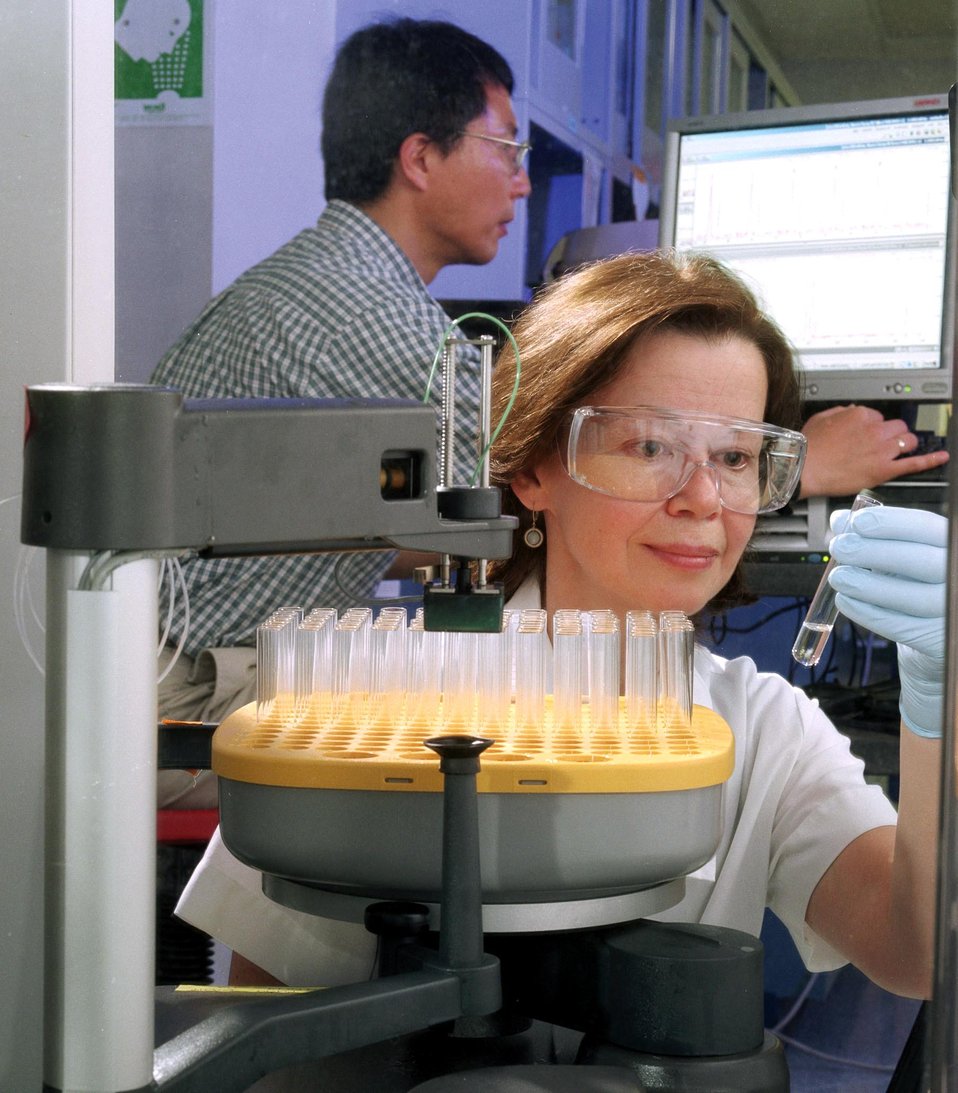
ANL BIOCHEMIST DEMENTIVA AND BIOPHYSICIST KIM WORK WITH THE FIRST ROBOT OF ITS TYPE TO AUTOMATE PROTEIN PURIFICATION.

THE ROBOT, HOUSED IN A REFRIGERATOR, IS AN INTEGRAL PART OF THE MIDWEST STRUCTURAL GENOMICS CENTER'S PLAN TO AUTOMATE THE PROTEIN CRYSTALLOGRAPHY PROCESS. AT THE CENTER, ANL SCIENTISTS AND UNIVERSITY TEAMS FROM THE U.S., CANADA AND BRITAIN ARE WORKING TO SPEED THE STRUCTURAL BIOLOGY VISUALIZATION PROCESS. THEY ARE AUTOMATING LABORATORY WORK, DEVELOPING AND USING IMPROVED COMPUTER ANALYSIS PROGRAMS AND WORKING WITH COMPUTER SCIENTISTS TO IDENTIFY POTENTIAL TARGETS FOR COMPARATIVE ANALYSIS.